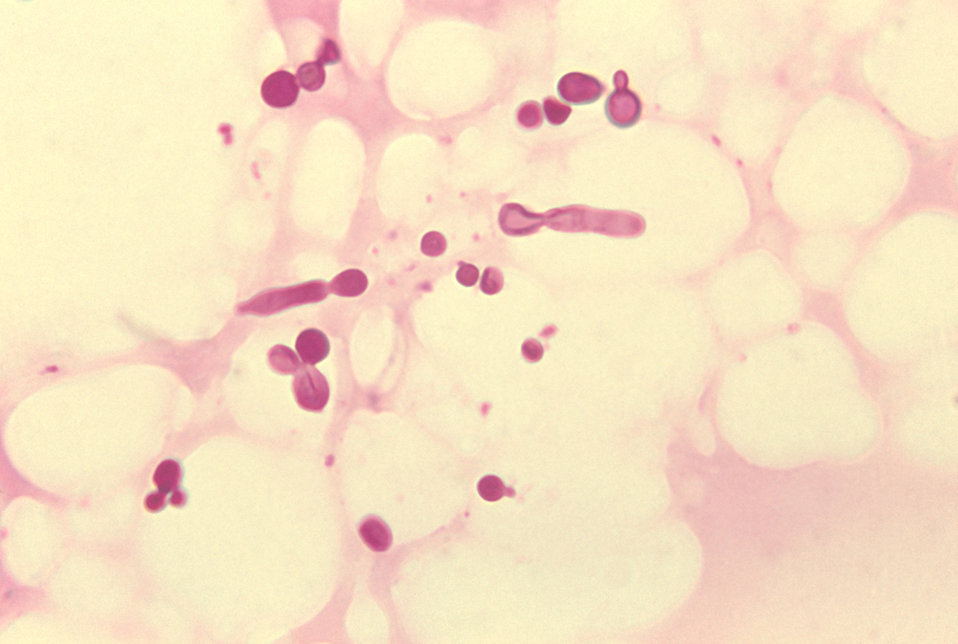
Note the yeast-like fungal cells and short hyphae of M. furfur in skin scale from a patient with tinea versicolor.